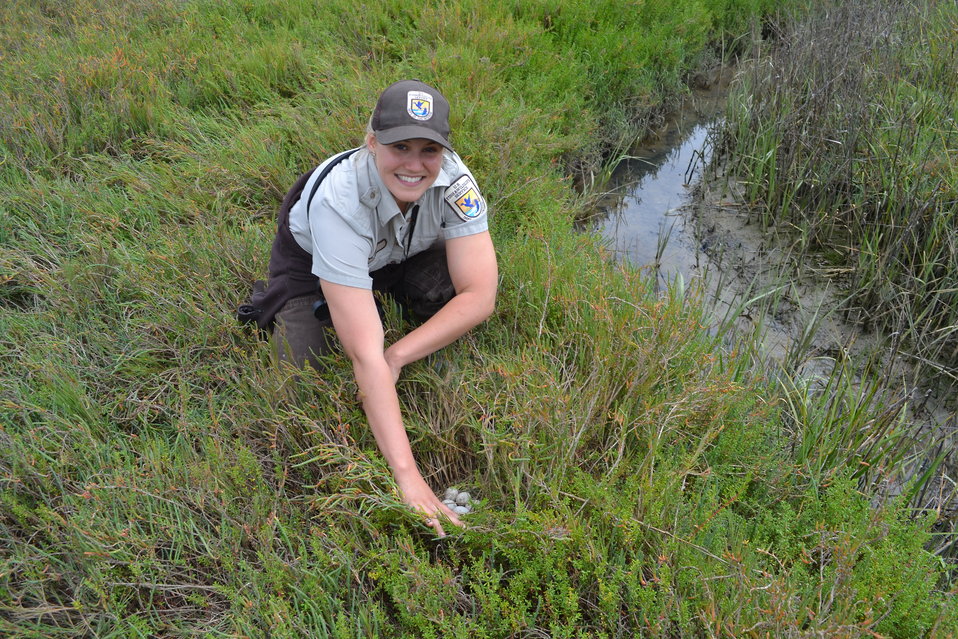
Ranger Lisa Cox finds her first Light-footed clapper rail nest

Interpretive Ranger Lisa Cox finds her first Light-footed clapper rail nest while searching with biologists.